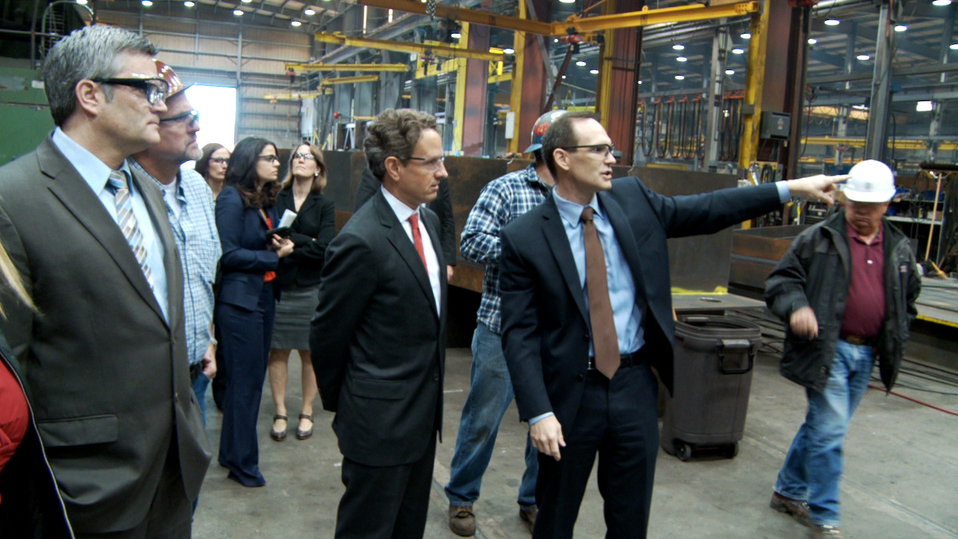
Treasury Secretary Geithner Visits Oregon Iron Works

Treasury Secretary Tim Geithner visited the Oregon Iron Works/United Streetcar facility in Clackamas, Oregon to highlight the importance of investing in domestic manufacturing and infrastructure to strengthen the U.S. economy and create jobs.